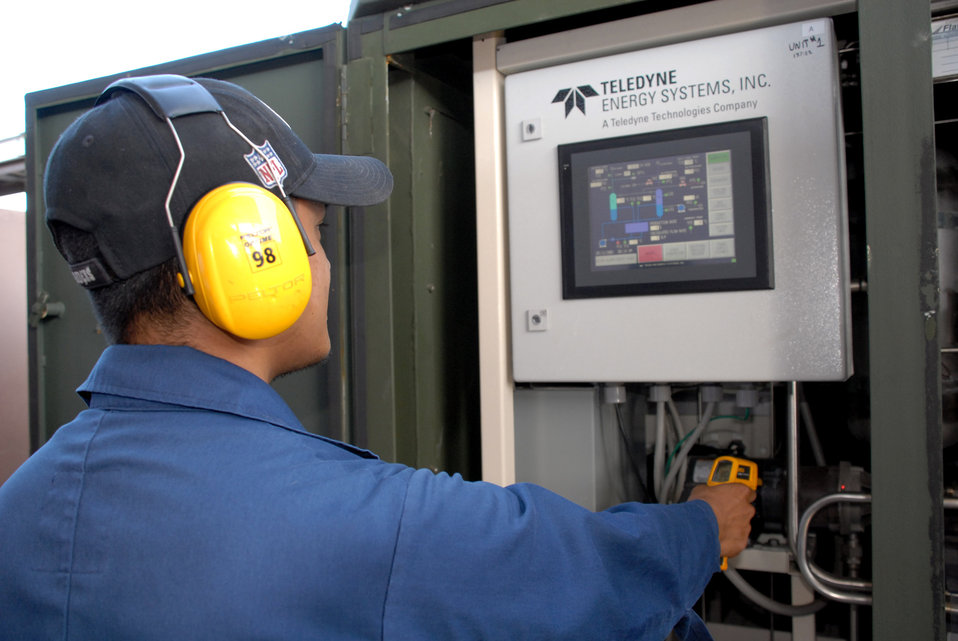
Air Force solar-powered hydrogen plant completed

Chris Gaje checks the temperature on an electrolyzer at Hickam Air Force Base, Hawaii, May 13. The electrolyzer uses water (H2O) and electricity from the inverter box to flash boil water so hot and so fast that the hydrogen and oxygen atoms in the water split to make pure hydrogen. The hydrogen provides non-petroleum-based power for vehicles The first hydrogen-powered vehicle here was developed in 2003, and because the hydrogen plant is now powered by the solar array they have achieved a major demonstration milestone in the program.